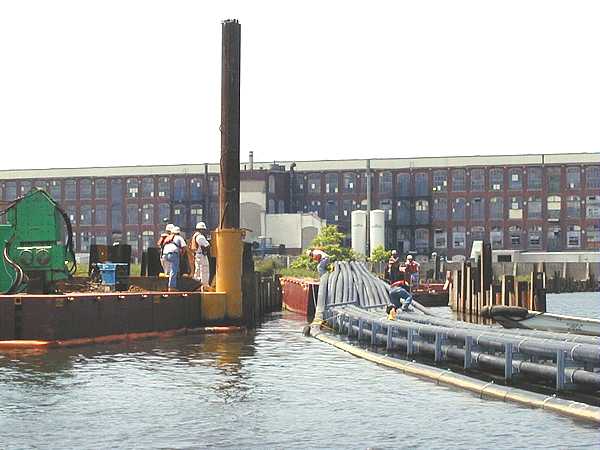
2001, Phase 1 of submerged power cable relocation

EPA in partnership with NSTAR has to relocate thirteen submerged NSTAR power cables that run across the harbor. These photos show the first phase wherein the cable conduits for the new replacement cables were being placed.